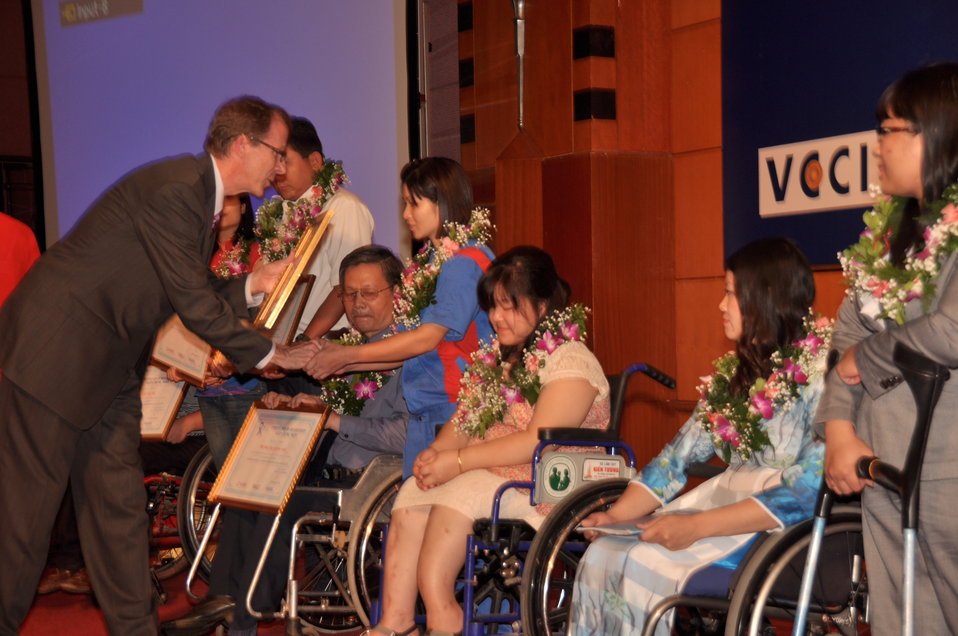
USAID Mission Director Joakim Parker awards employees with disabilities 1114

Hanoi, April 17, 2013